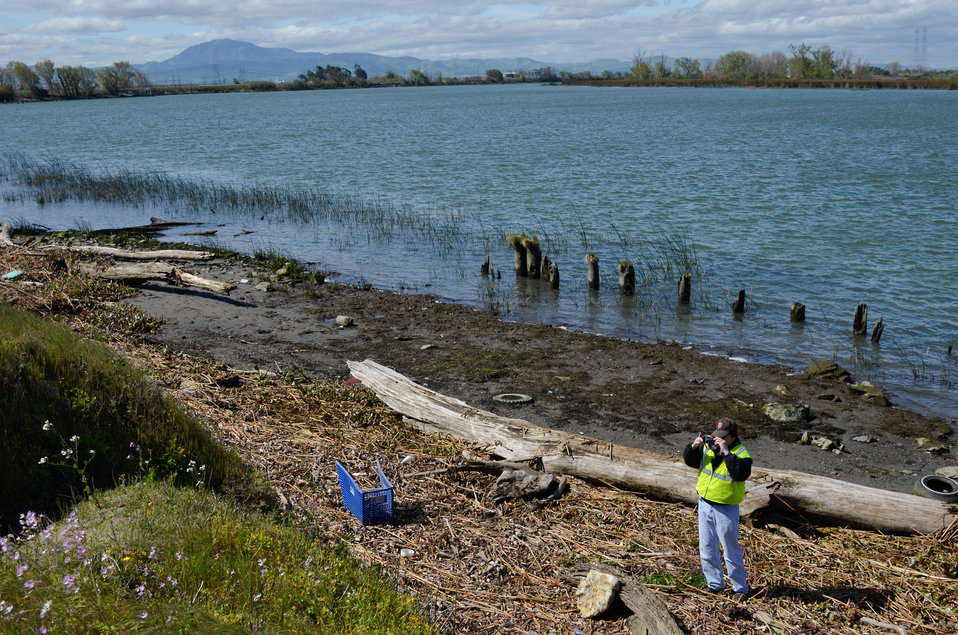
Inspecting a Sacramento River levee

Levee inspector Gene Vaughan, with the U.S. Army Corps of Engineers Sacramento District, documents findings during a routine levee inspection on the Sacramento River near Rio Vista, Calif., March 27, 2013. The results of U.S. Army Corps of Engineers levee inspections determine continued eligibility for federal aid in repairing levees damaged by floods or storms, and help communities understand and make informed decisions about their flood risk. Corps inspectors document all maintenance issues with GPS coordinates and photographs to help agencies that maintain levees prioritize and fix issues as quickly as possible.